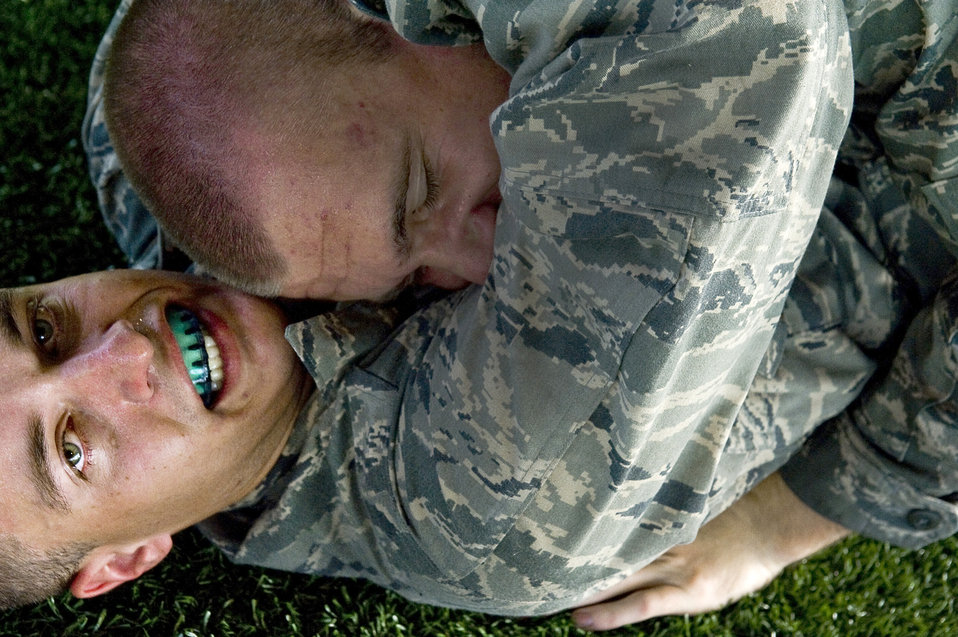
Instructors teach ROTC cadets defense techniques

Cadets spar during combative training at Maxwell Air Force Base, Ala., July 22, 2010. The cadets learned extensive skills that will help them defend themselves during combat.